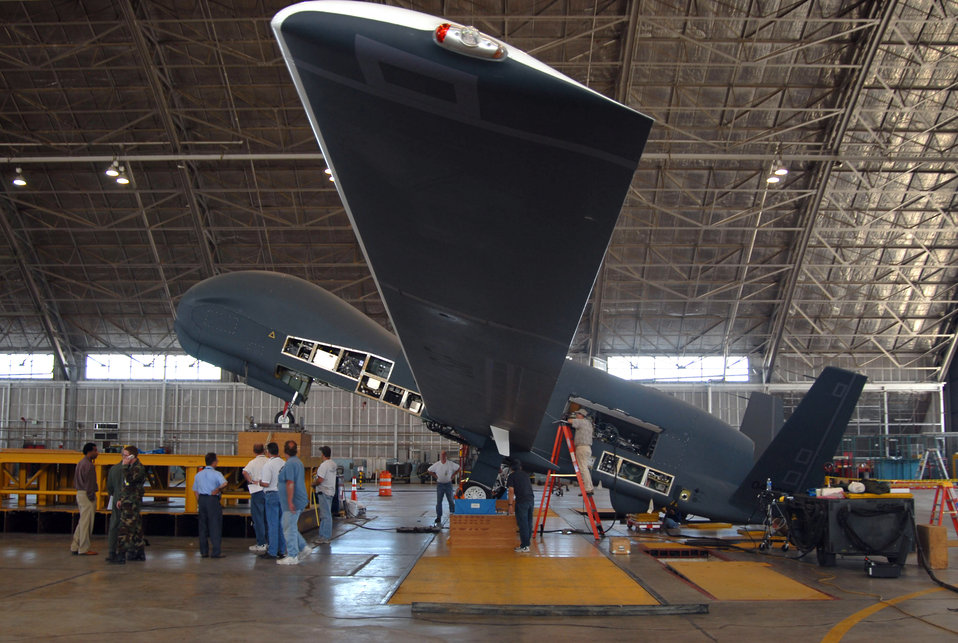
Global Hawk passes fuel test

A team of engineers and maintainers raised the nose of the RQ-4 Global Hawk to achieve a 20-degree angle during the fuel starvation testing, at Edwards Air Force Base, Calif, in October. The team included members from the Northrop-Grumman organization, Air Force Flight Test Center and the 452nd Flight Test Squadron.